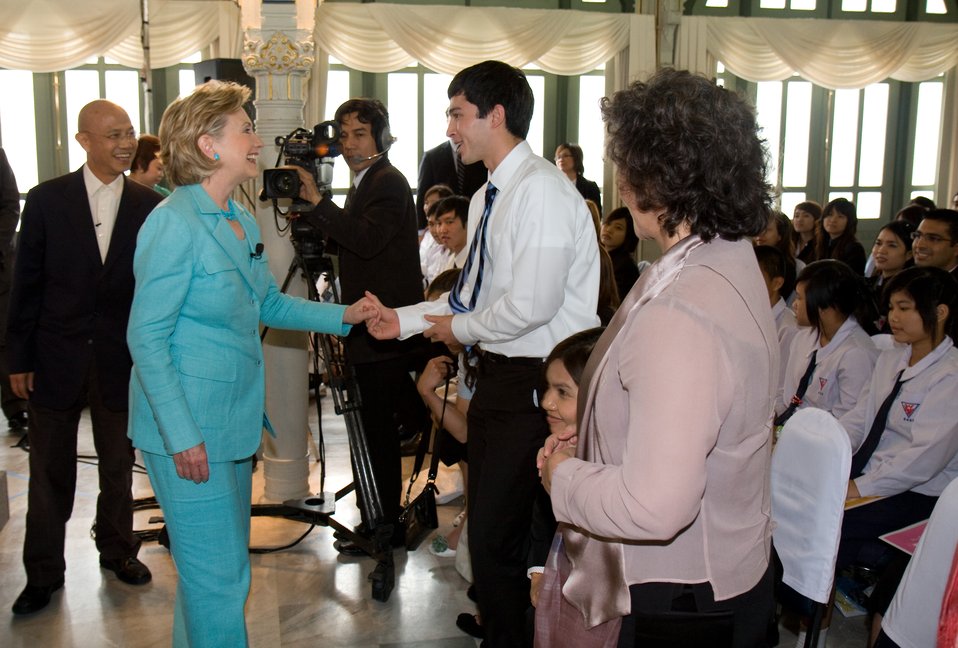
Secretary Clinton Interviews With the Nation Group

U.S. Secretary of State Hillary Rodham Clinton is greeted by a Thai student after an interview Phyathai Palace in Bangkok, Thailand July 22, 2009.